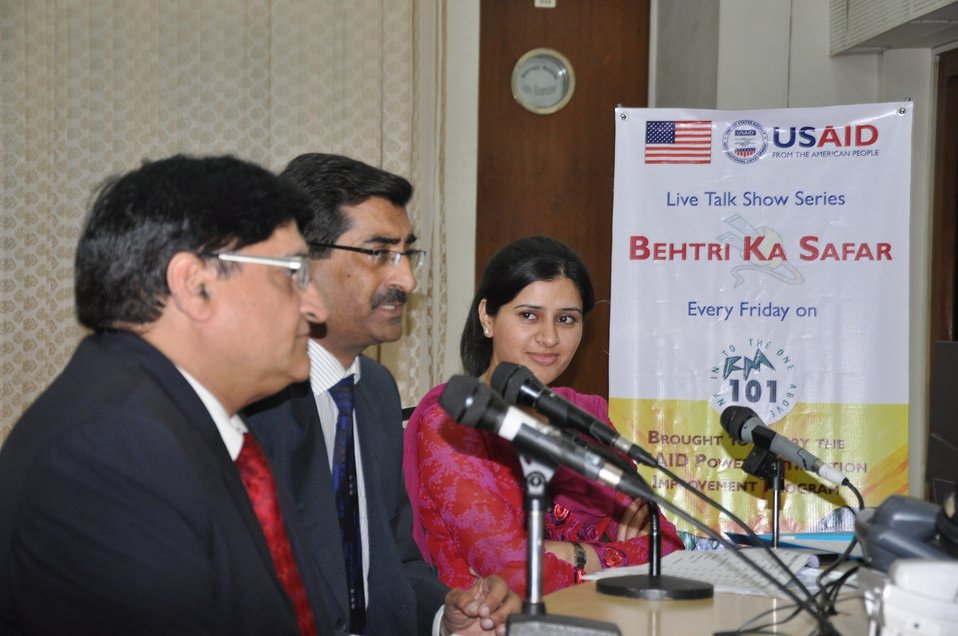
30 Sept, 2011 - Live Talk Show Series Every Friday 'Behtari Ka Safar' on FM 101

USAID's Power Distribution Program held a set of training workshops on September 7-8th aimed at improving the commercial procedures and efficiency of power distribution companies (DISCOs). The topics under discussion included the 'Meter Reading Process' and 'Meter Change Process' and finding ways to bring improvements to DISCOs' existing procedures by streamlining the flow of documents and eliminating redundancies without compromising transparency and accountability.
Power Distribution Program's Outreach program ‘Behtri Ka Safar’ (A Journey of Improvement) was launched on the FM 101 radio station on September 23, 2011. The COP Dick Dumford and DCOP Saleem Arif went on air in the kick off broadcast of the program. The program is part of communications campaign and aims at creating awareness among the consumers about the role of Power Distribution Program in improving the DISCO’s performance. The program will have 13 weekly episodes in which DISCO’s representatives will participate and clarify their role and agenda as an effort to reach out to their consumers.